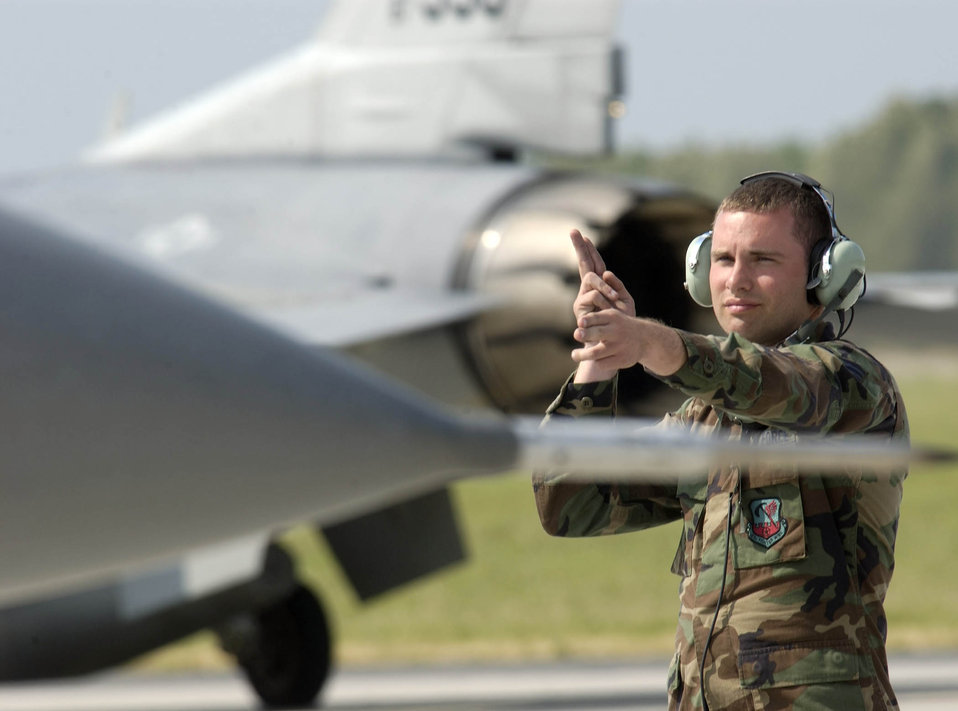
Guardsmen familiarize Polish airmen with F-16

POZNAN, Poland -- Senior Airman Sean Kaley guides an F-16 Fighting Falcon while another taxis in the background. Airmen from the Illinois Air National Guard's 183rd Fighter Wing are familiarizing Polish airmen with the F-16 during the U.S. European Command exercise Sentry White Falcon 2005 through June 17. In 2006, the Polish air force will start receiving their own F-16s that will begin replacing their Soviet-made MiG fighters as the country modernizes its military to NATO standards. Airman Kaley is a crew chief with the wing.